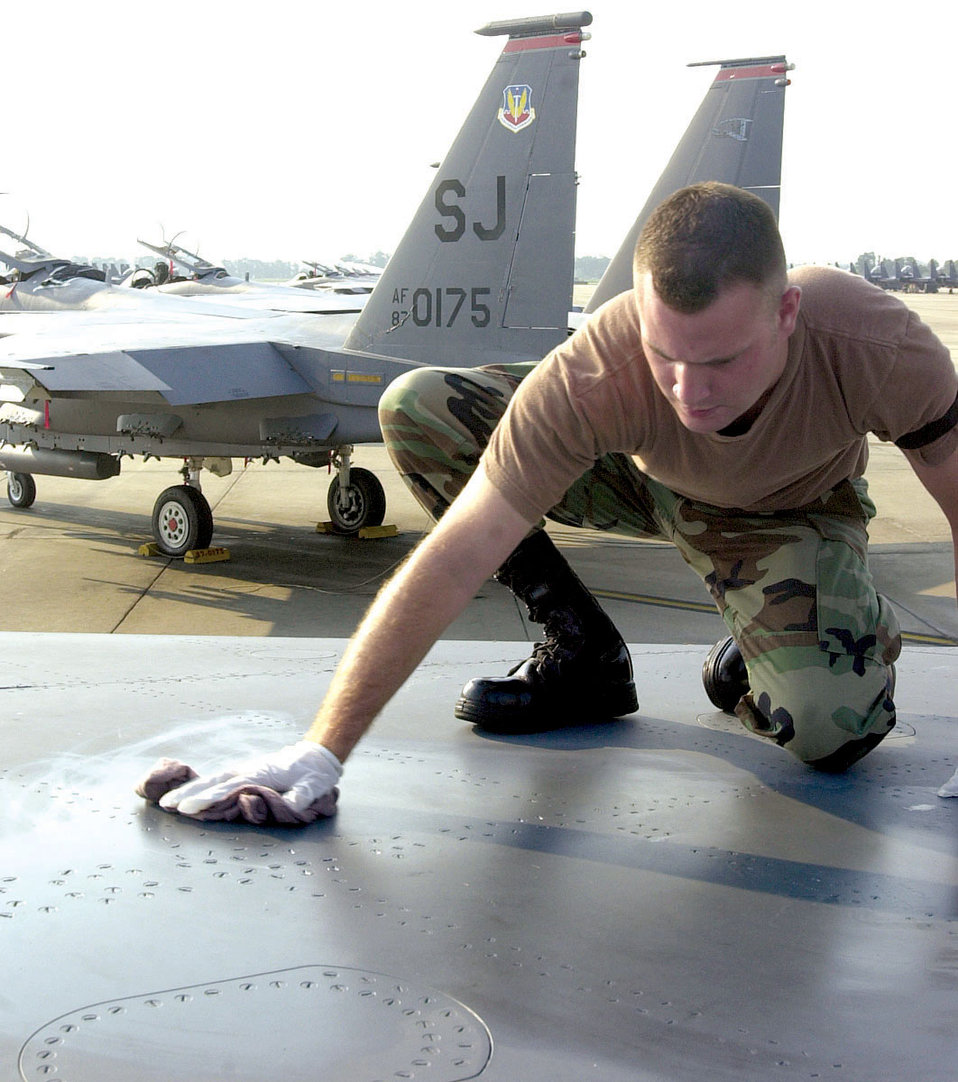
Ensuring Eagles Fly

SEYMOUR JOHNSON AIR FORCE BASE, N.C. -- Airman 1st Class Randy Drake, cleans an F-15E Strike Eagle's wing. Crew chiefs must clean the wings one hour before takeoff to help get the jet ready for flight. Airman Drake is assigned to the 333rd Aircraft Maintenance Unit here.